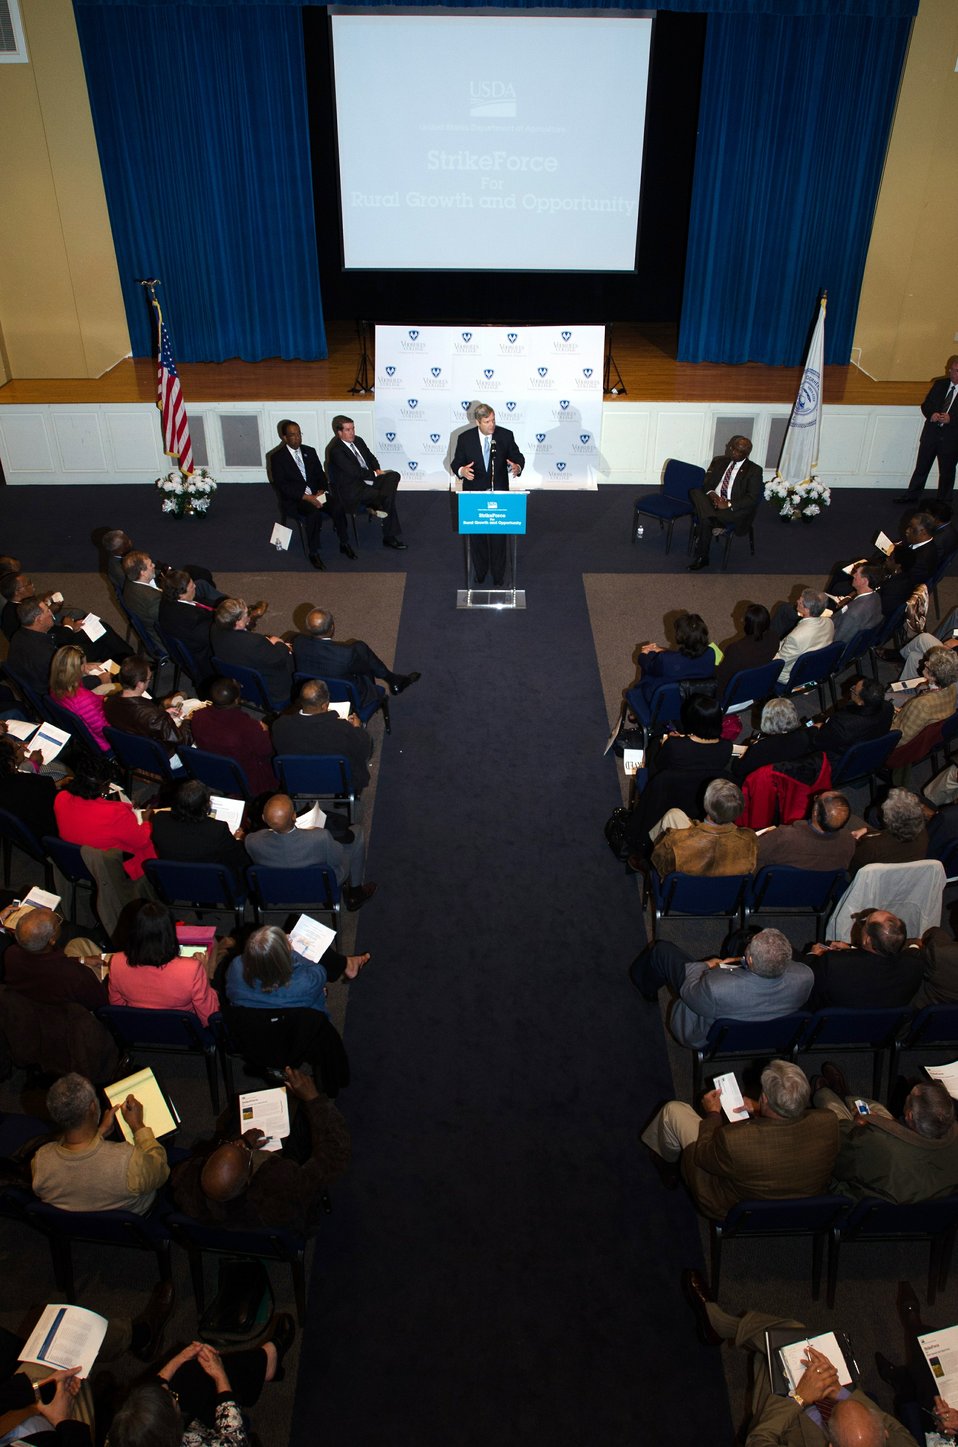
Agriculture Secretary Tom Vilsack speaks at the U.S. Department of Agriculture's (USDA) Strike Force for Rural Growth and Opportunity event held at Voorhees College in Denmark, SC, on Tuesday, March 26, 2013. The primary goal of the Strike Force initiative is to increase partnership with rural communities and leverage community resources in targeted, persistent poverty areas. Vilsack noted that through the Strike Force initiative, USDA will do more to partner with local and state governments and community organizations on projects that promote economic development and job creation.